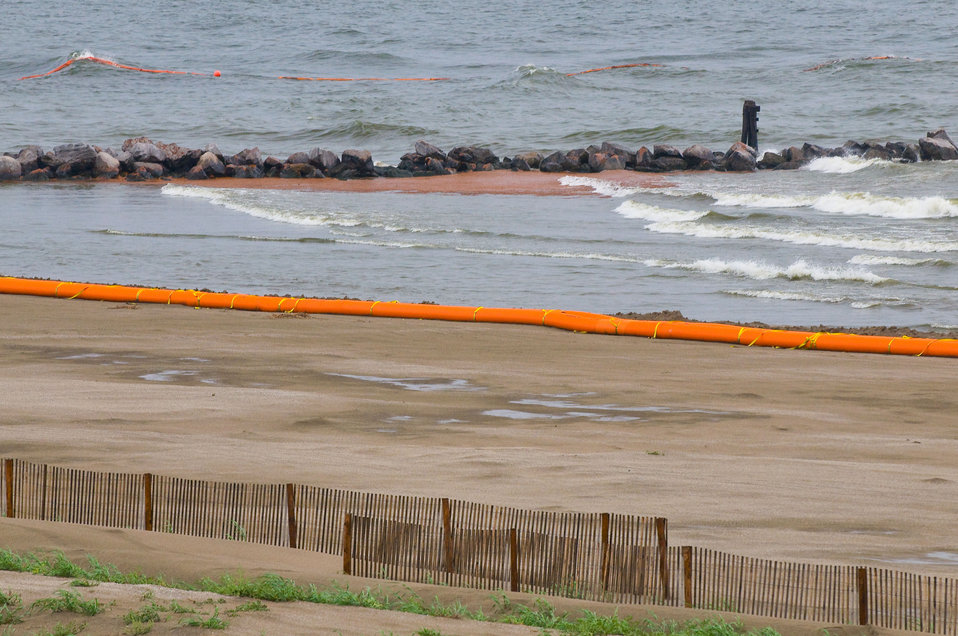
June 4, Natural and manmade boundaries trap oil from the BP Spill

Oil, beach and boom at Grand Isle, La.